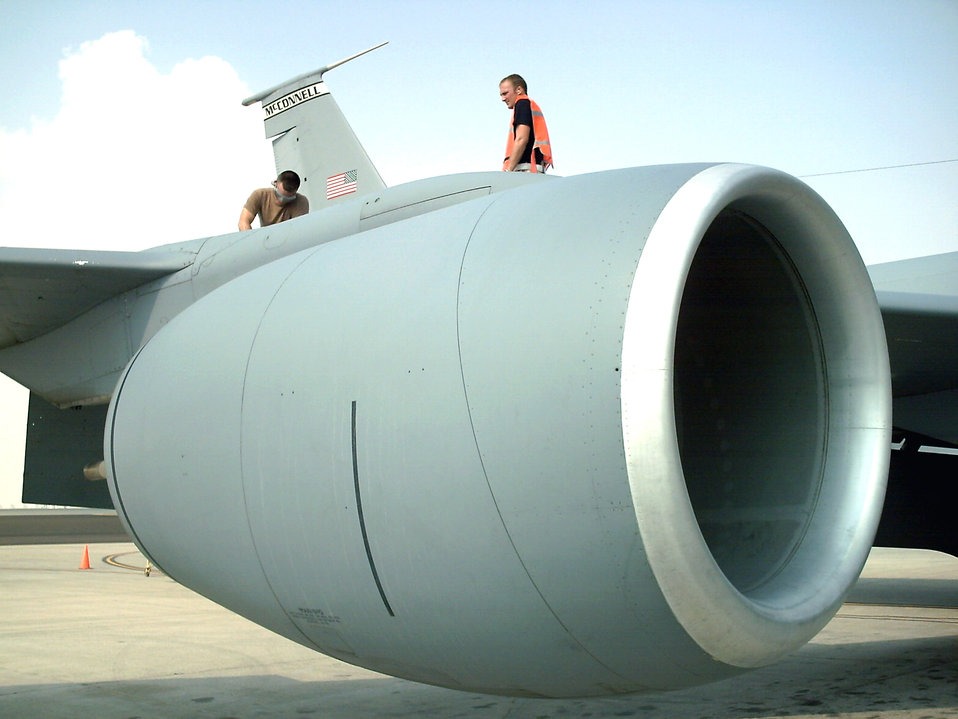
Deployed operations

Senior Airmen James Seelye and Kevin Street service the hydraulic system of a KC-135 Stratotanker Sept. 28 at a forward-operating base in Southwest Asia. The Airmen work for the largest tanker unit in the area of responsibility, the 908th Expeditionary Air Refueling Squadron, assigned to the 380th Air Expeditionary Wing. The unit includes KC-10 Extenders and KC-135 Stratotankers.